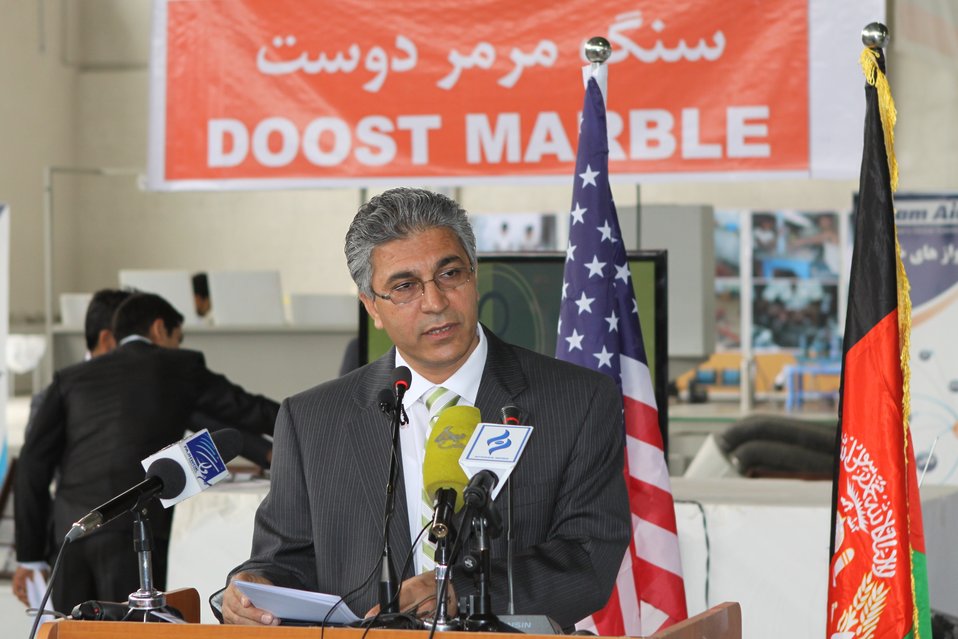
100525 Hirat Marble Conference 161